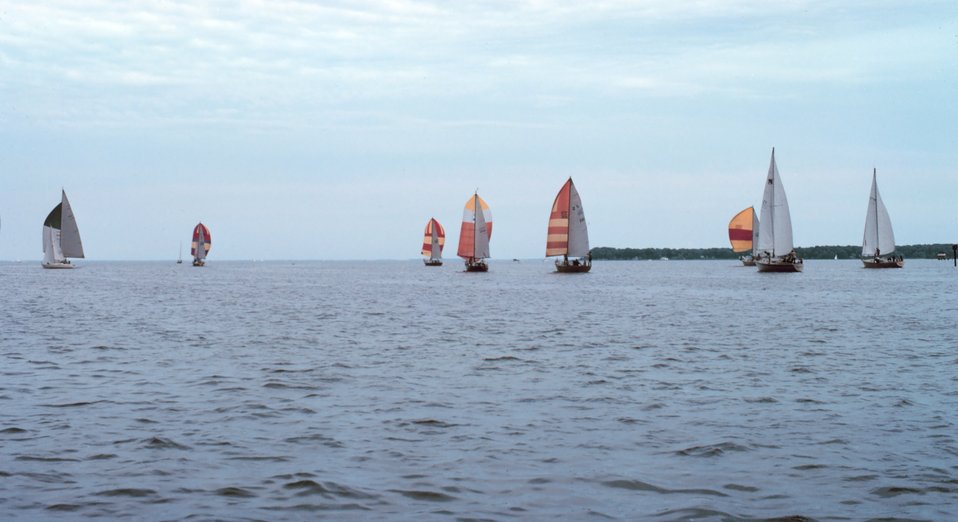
Sailing is a popular pastime on the Chesapeake Bay.